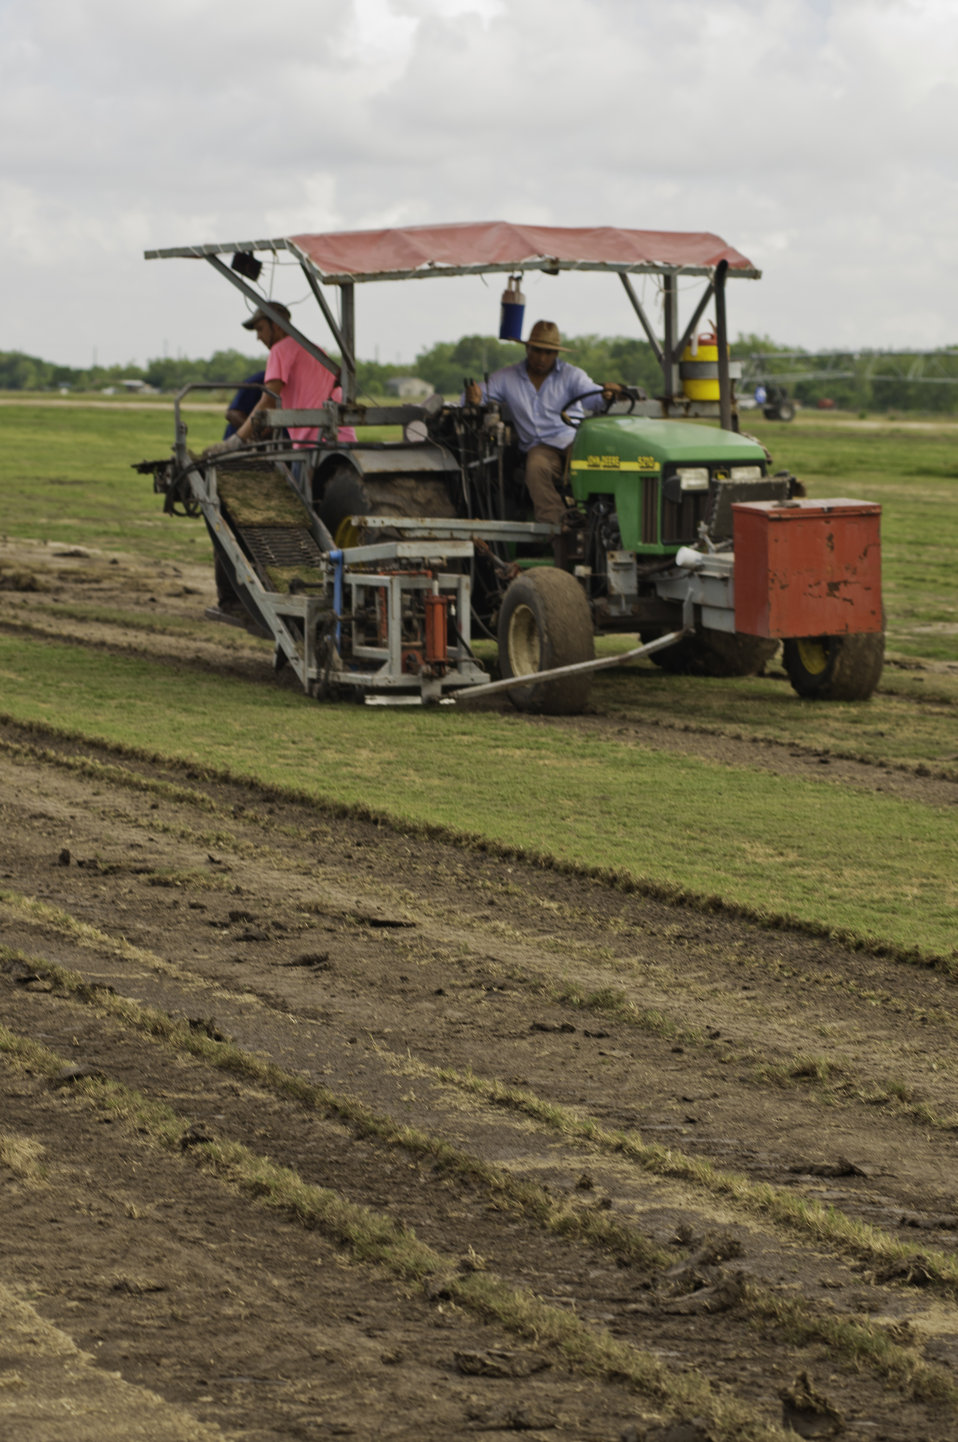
Sod used in landscaping is harvested on the Quality Turf Farms in Guy, TX on Aug. 23, 2013.